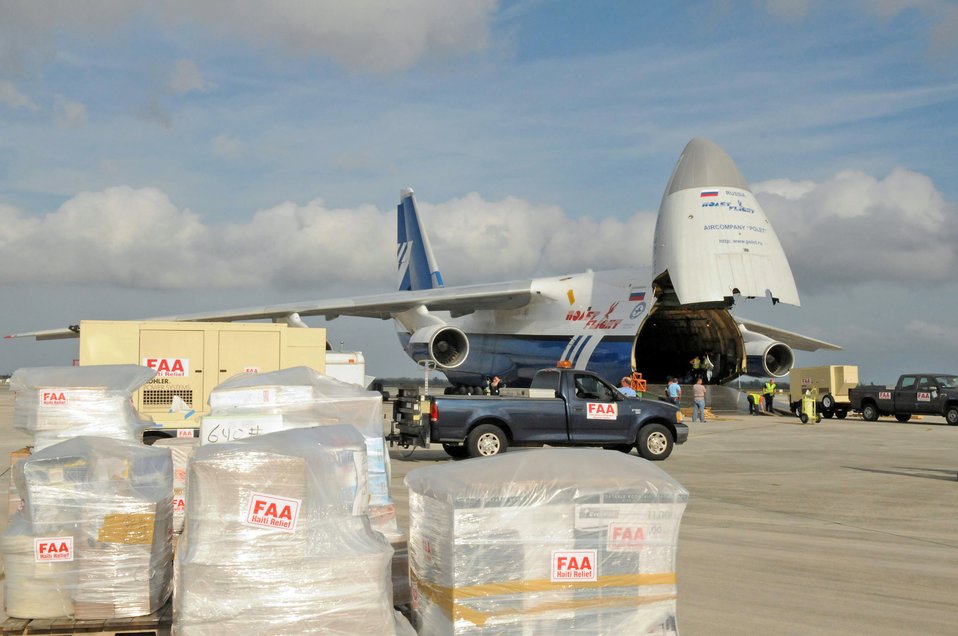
Air Force, FAA use Russian aircraft to move mobile air traffic control tower

Members of the Federal Aviation Administration load a mobile air traffic control tower, generators, food, clothing and water aboard a Russian Antonov An-124 cargo plane en route to Haiti. The tower will be used to help improve the efficiency of aircraft flying in and out of Haiti. The supplies will be used to support Operation Unified Response.